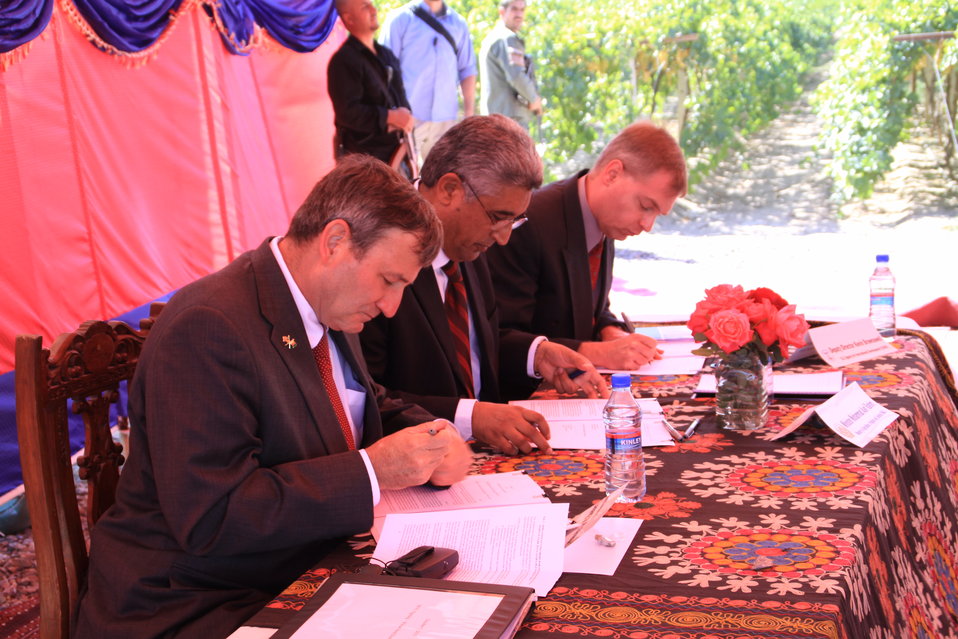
AVIPA Plus Wheat Seed Distribution 101005

US Ambassador Karl Eikenberry and USAID Acting Mission Director Kevin Brownawell joined the Minister of Agriculture, Irrigation and Livestock, H.E. Minister Mohammed Rahimi in signing a Memorandum of Understanding and distributing vouchers to area farmers for wheat and fertilizer.

US Ambassador Karl Eikenberry and USAID Acting Mission Director Kevin Brownawell joined the Minister of Agriculture, Irrigation and Livestock, H.E. Minister Mohammed Rahimi in signing a Memorandum of Understanding and distributing vouchers to area farmers for wheat and fertilizer.